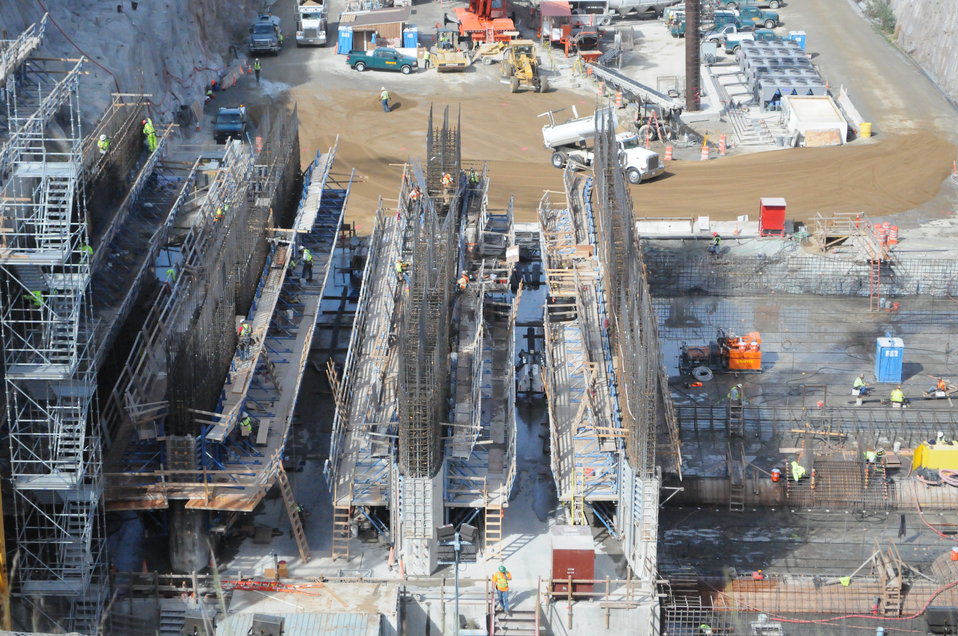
Placing Steel Rebar

Contractors working for the Sacramento District construct the support system for the rising Folsom Dam auxiliary spillway on March 14. The control structure—essentially a second dam—will stand as tall as the Statue of Liberty upon completion, estimated in October 2017, and will help reduce the risk of flooding in the Sacramento region.